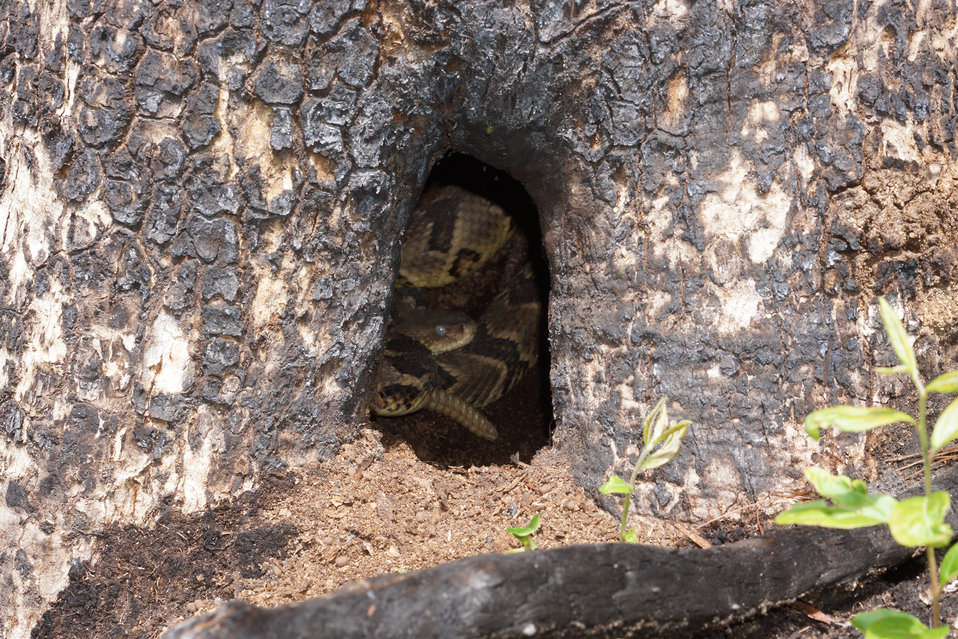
Timber rattlesnake

In May, bog conservationists from Tennessee, North Carolina, and Georgia convened in the north Georgia mountains for the spring, 2014 meeting of the Bog Learning Network. The event provided an opportunity for biologists to see, first hand, the result of management efforts at two north Georgia bogs. More importantly, the outings provided an opportunity to share innovative approaches to bog management, such as the role of the Georgia Plant Conservation Alliance in conserving rare plants and coordinating a cadre of volunteers to work on bog management.

The Bog Learning Network was convened in the winter of 2013 as a way to bring together people working for bog conservation across the Southern Appalachians. Southern Appalachian bogs are one of North America’s rarest habitats and home to many rare plants and animals.